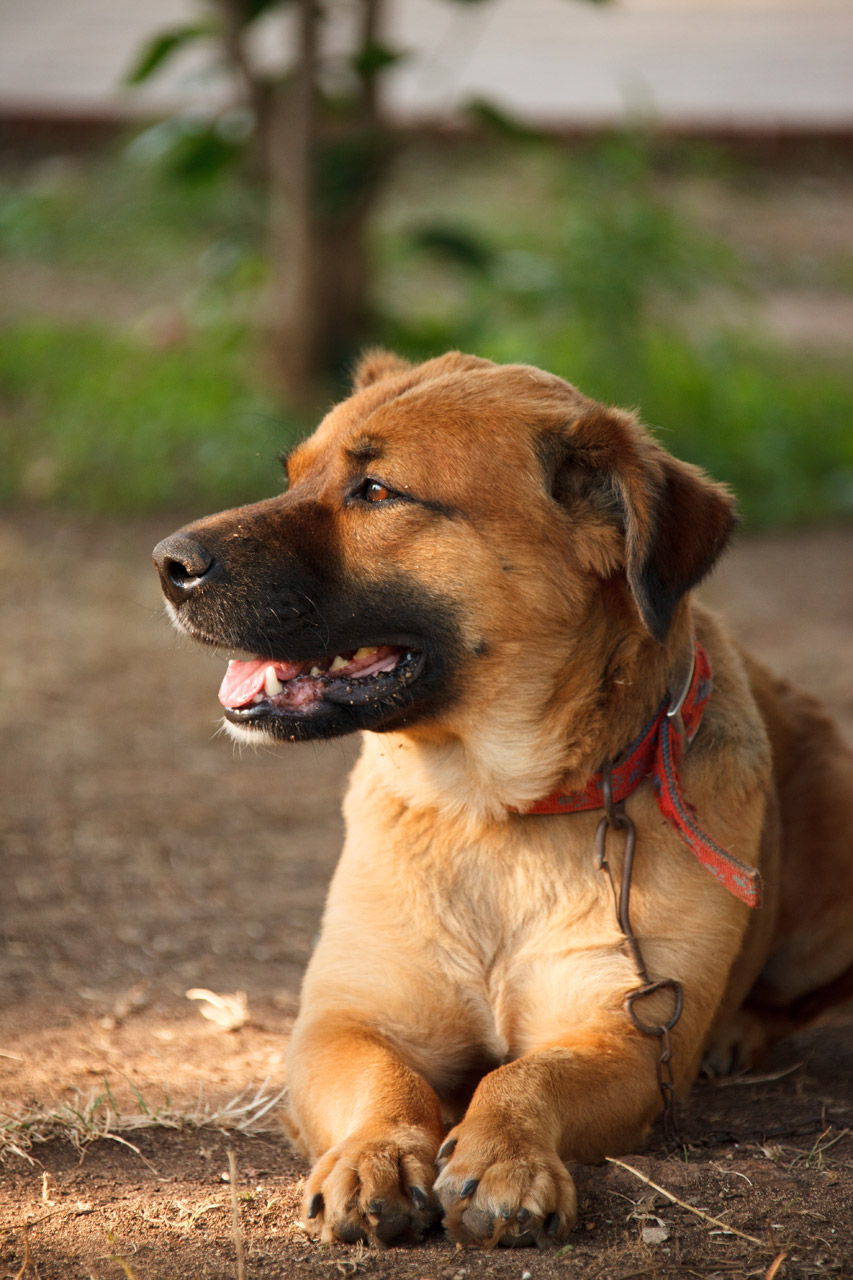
Dog looking

Cute dog looking at something.